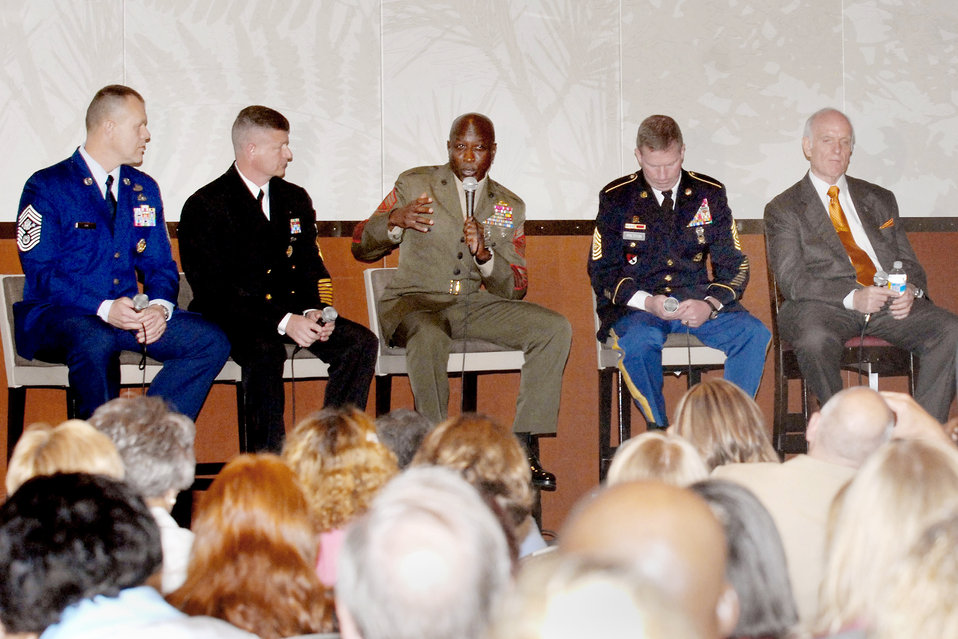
Services' top enlisted members discuss family support

Sgt. Maj. of the Marine Corps Carlton W. Kent (center) answers a question from the audience druing a town hall meeting during the Defense Department's Joint Family Readiness Conference Sept. 1, 2009, in Chicago. Sergeant Major Kent was joined by Chief Master Sgt. of the Air Force James A. Roy (left) Master Chief Petty Officer of the Navy Rick West, and Sgt. Maj. of the Army Kenneth O. Preston. Arthur J. Myers (right) moderated the discussion.